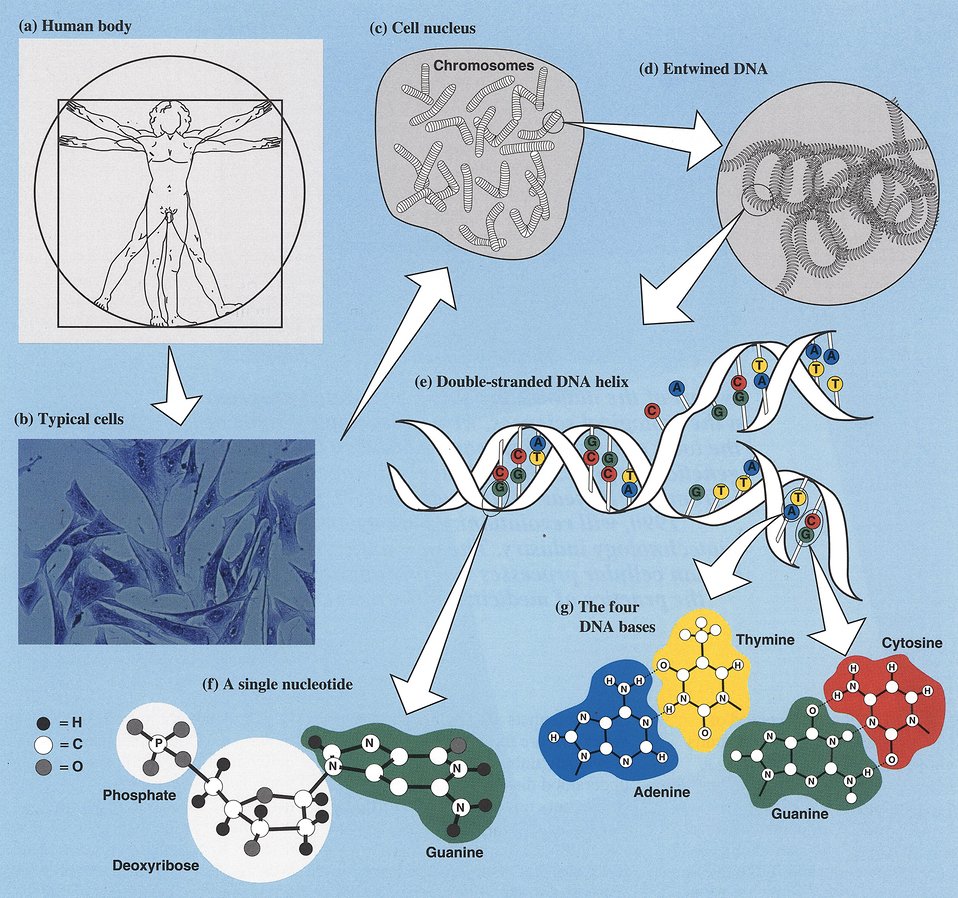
The structure of DNA and genetic information.